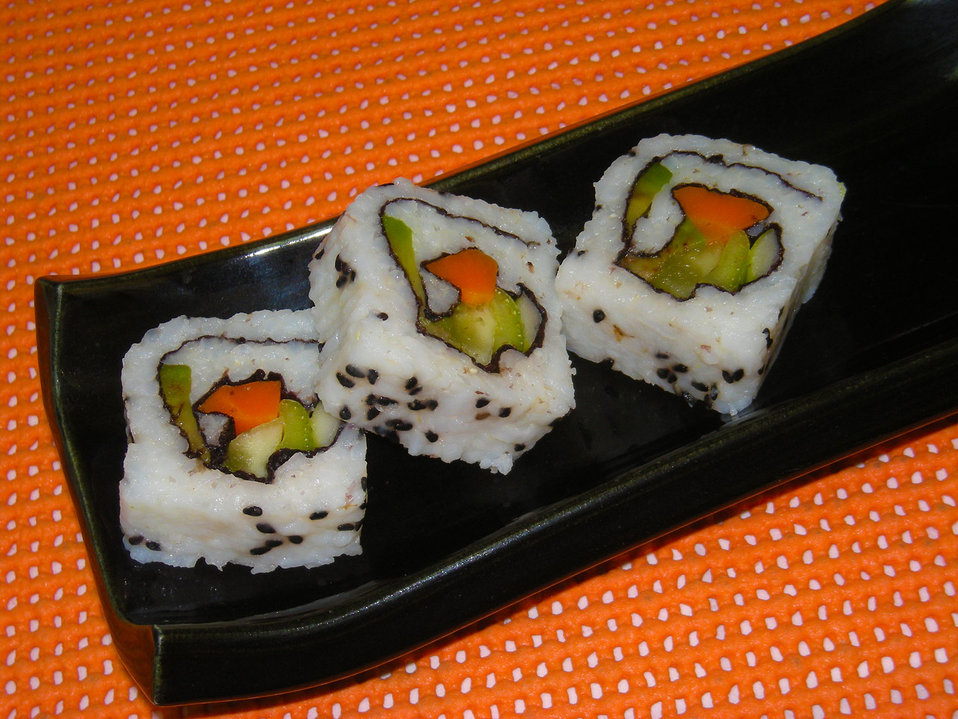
Sushi

Black tray with sushi.